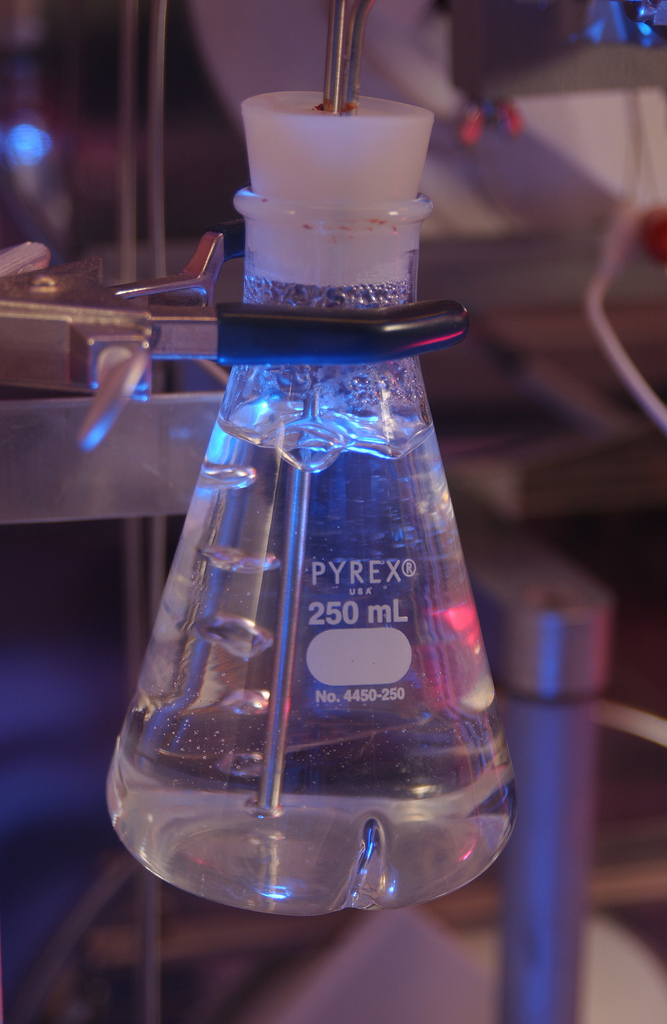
Scientists at Pacific Northwest National Laboratory are developing materials and techniques used to fabricate solid oxide fuel cells.